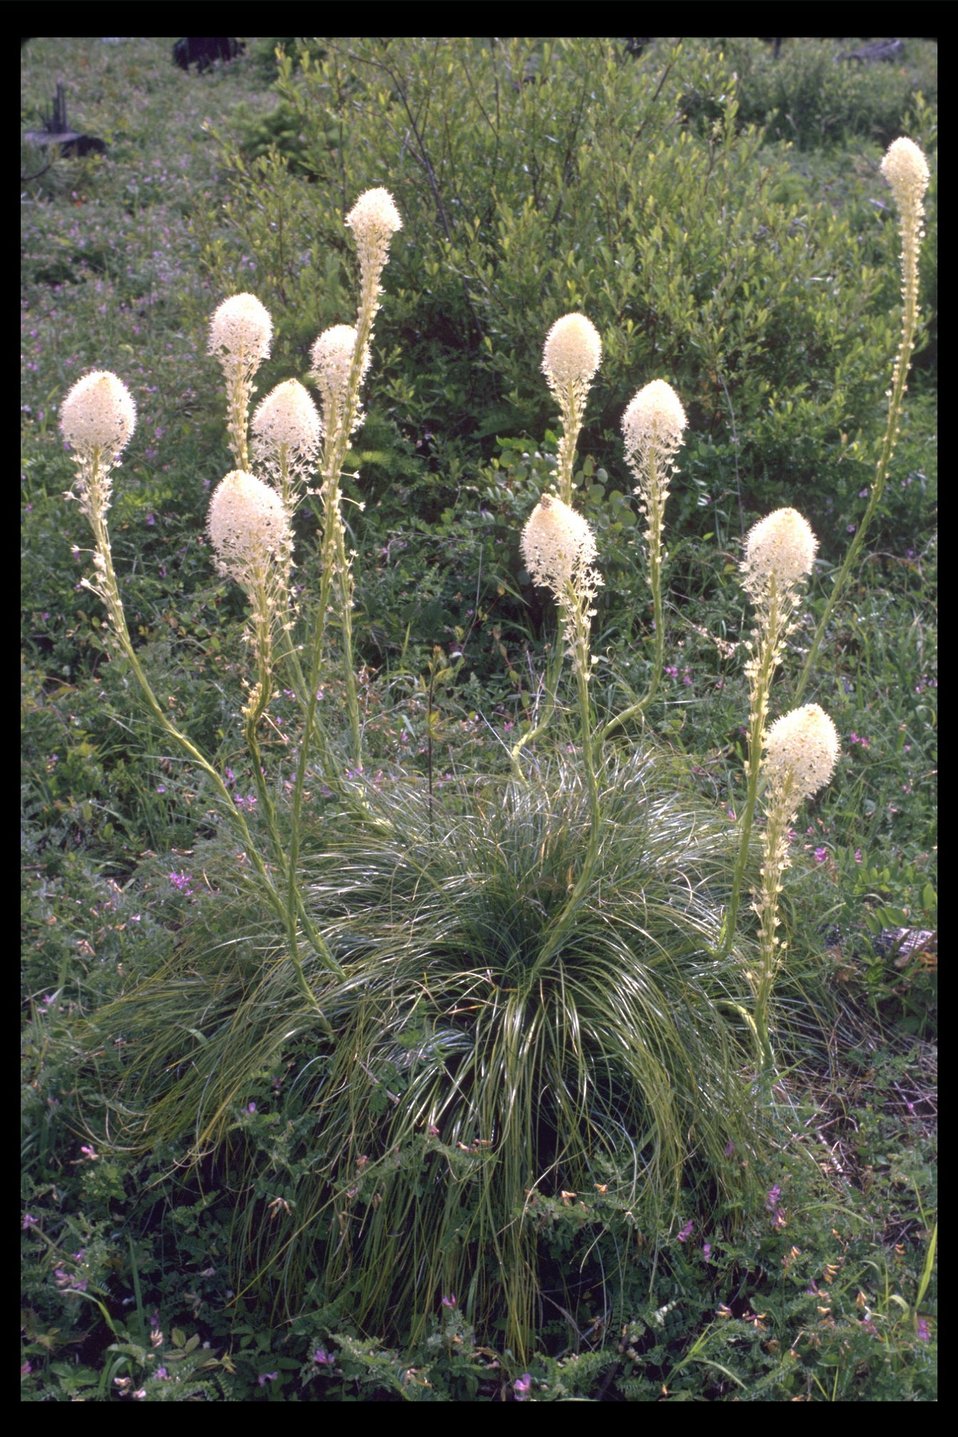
Bear Grass (Xerophyllum tenax) along Board Mountain.